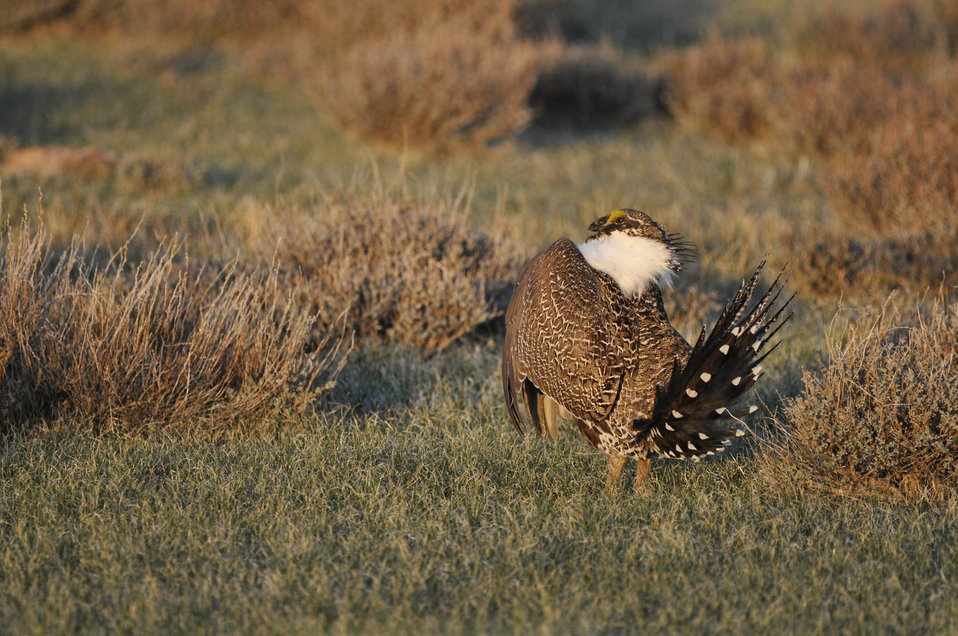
Greater Sage-Grouse

Photo Credit: Jeannie Stafford/USFWS
A greater sage-grouse male struts at a lek (dancing or mating ground) near Bridgeport, CA to attract a mate.